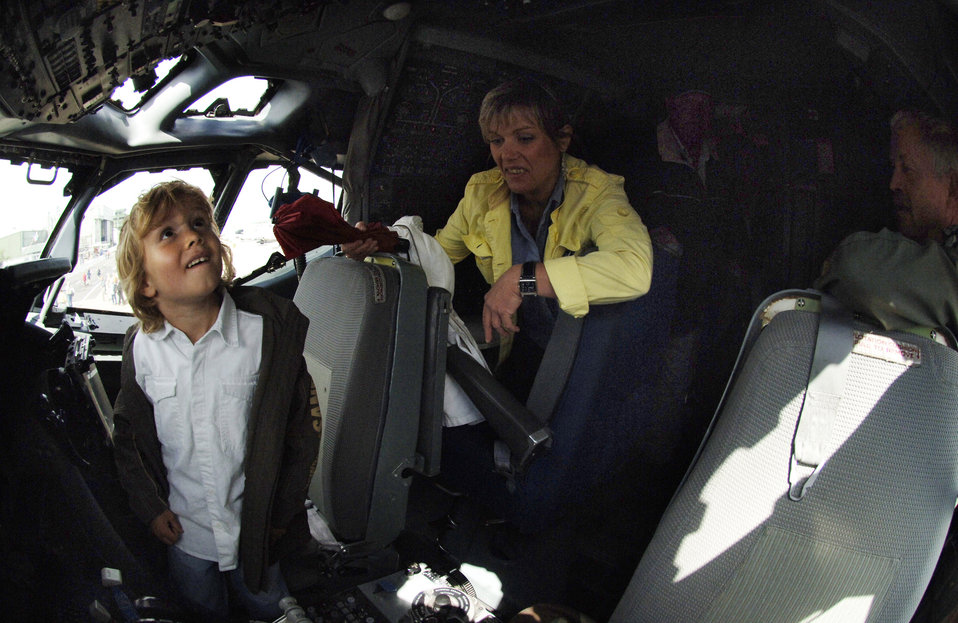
NATO celebrates 25th anniversary of E-3's arrival

Six-year-old Noah Kranz and his mother, Heidi, tour the cockpit of a NATO E-3 Airborne Early Warning and Control Force aircraft June 16 at Geilenkirchen NATO Air Base, Germany. The civilians were among several thousand local citizens who attended a 25th anniversary celebration of the aircraft's initial operations at the NATO base in northern Germany.